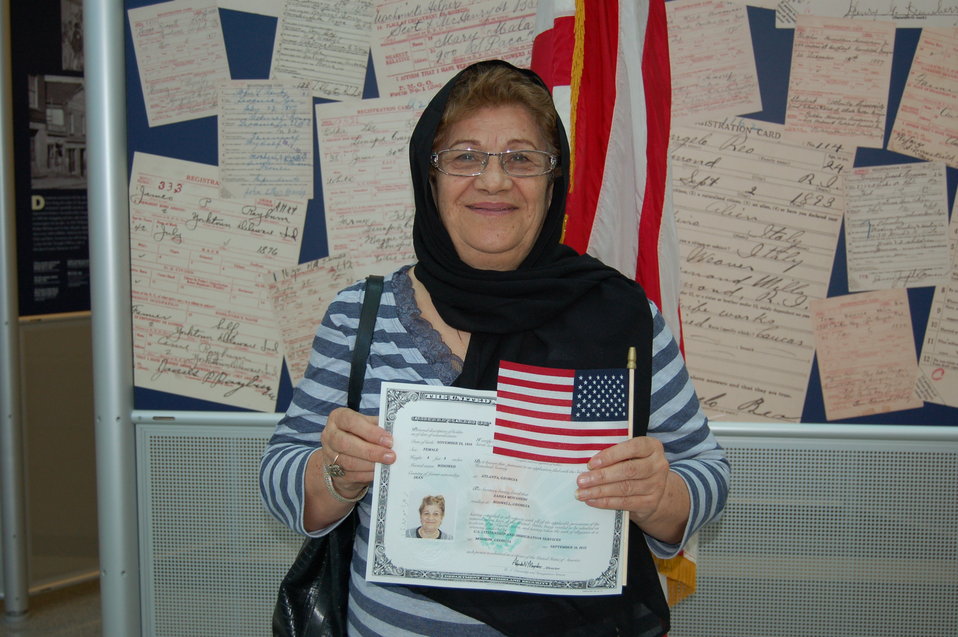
New Citizens